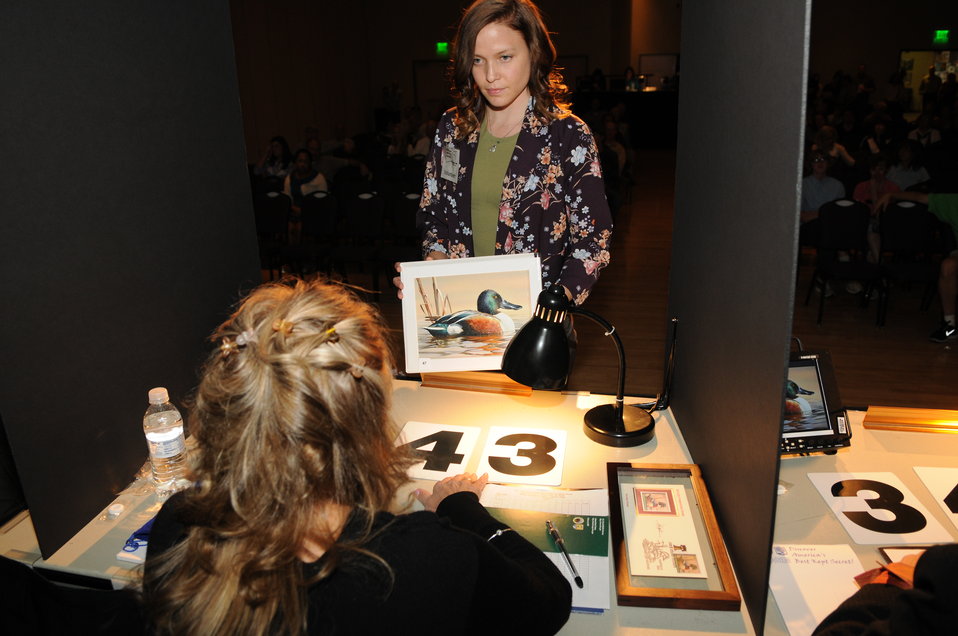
Judging

The U.S. Fish & Wildlife Service sponsored the 2012 Federal Duck Stamp Art Contest September 28 and 29 in Ogden, Utah, at Weber State University. A panel of five judges was responsible for choosing the art work used to design the 2013-2014 Migratory Bird Hunting and Conservation Stamp.